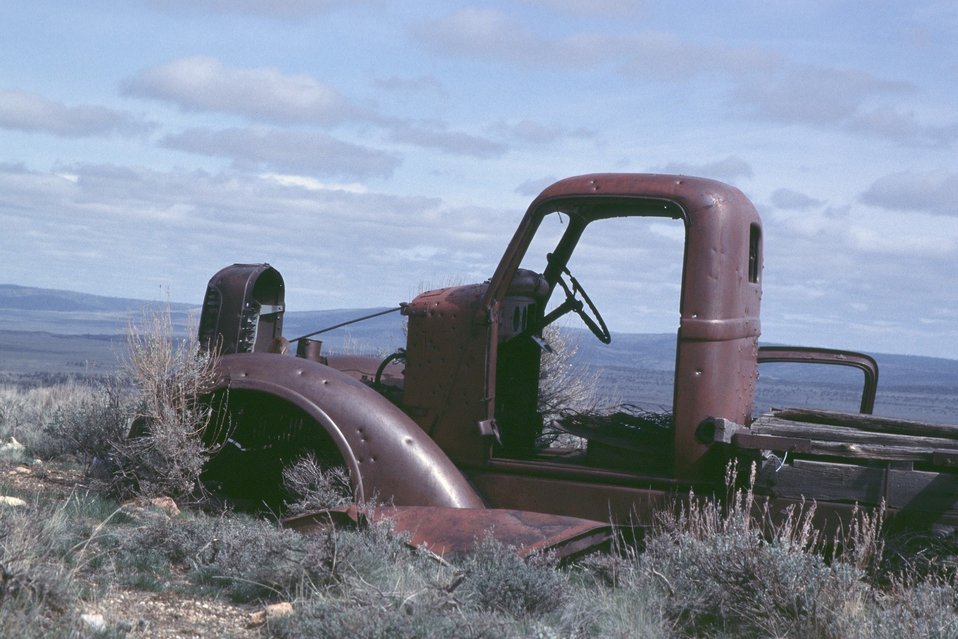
AML Glass Buttes, Burns District. Abandoned truck near G4.